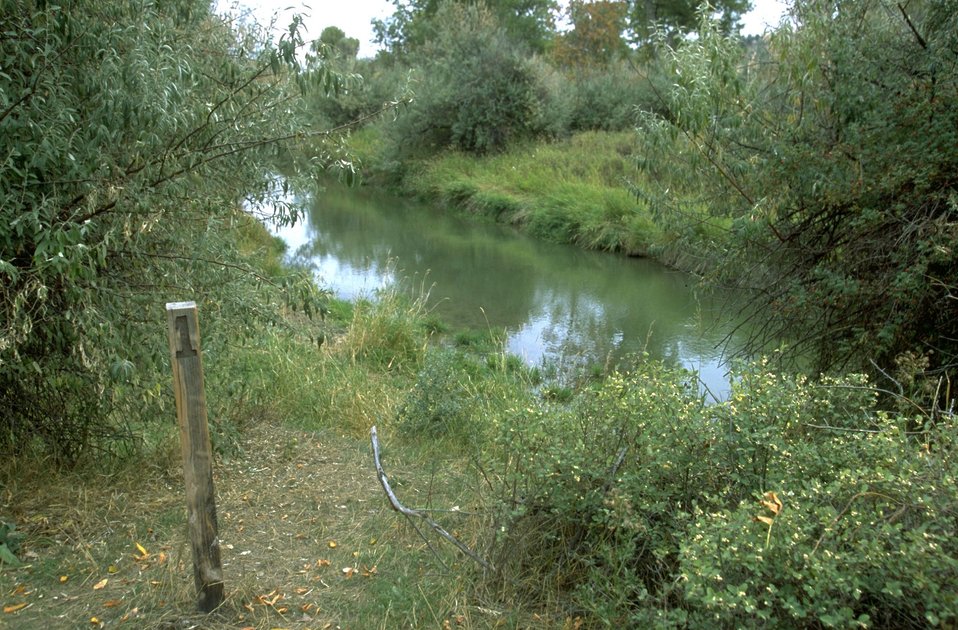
Trail marker on Howrey Island nature trail, Yellowstone River